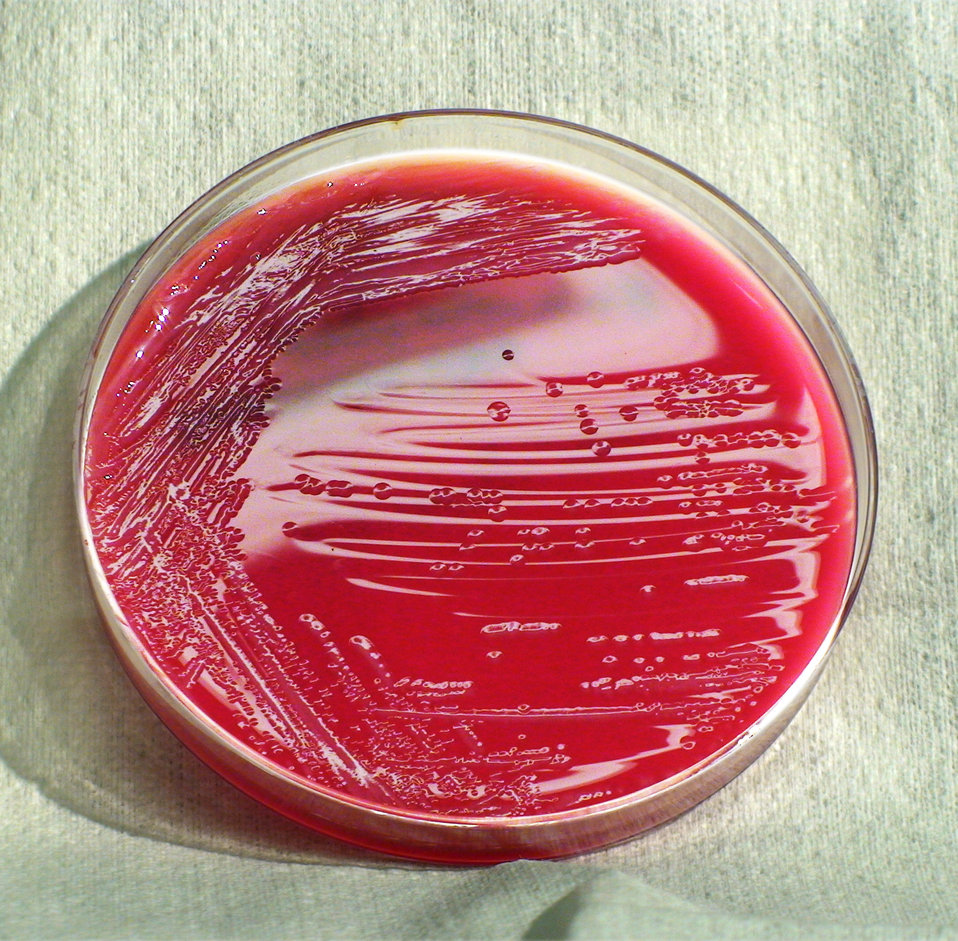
This photograph depicts the colonial morphology displayed by what was formerly known as Gram-negative Enterobacter agglomerans, and has since been renamed, Pantoea agglomerans bacteria, which was grown on a medium of sheep's blood agar (SBA), for a 24 hour time period, at a temperature of 37�C. See PHIL 12436, for a closer view of these bacterial colonies.